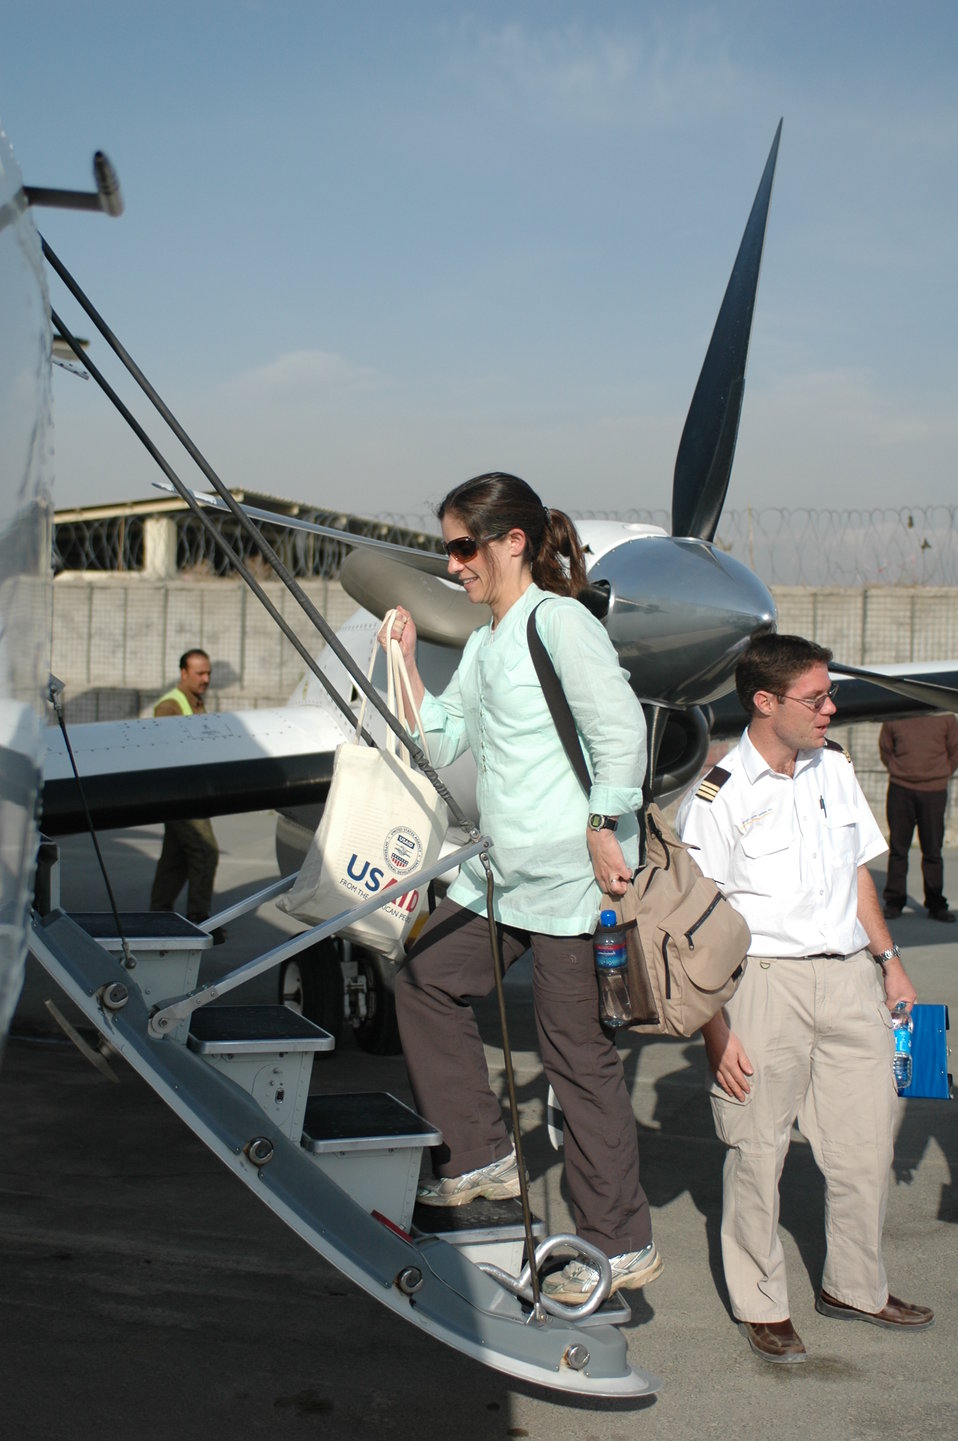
Dr Shah Visits Kandahar April 9, 2010